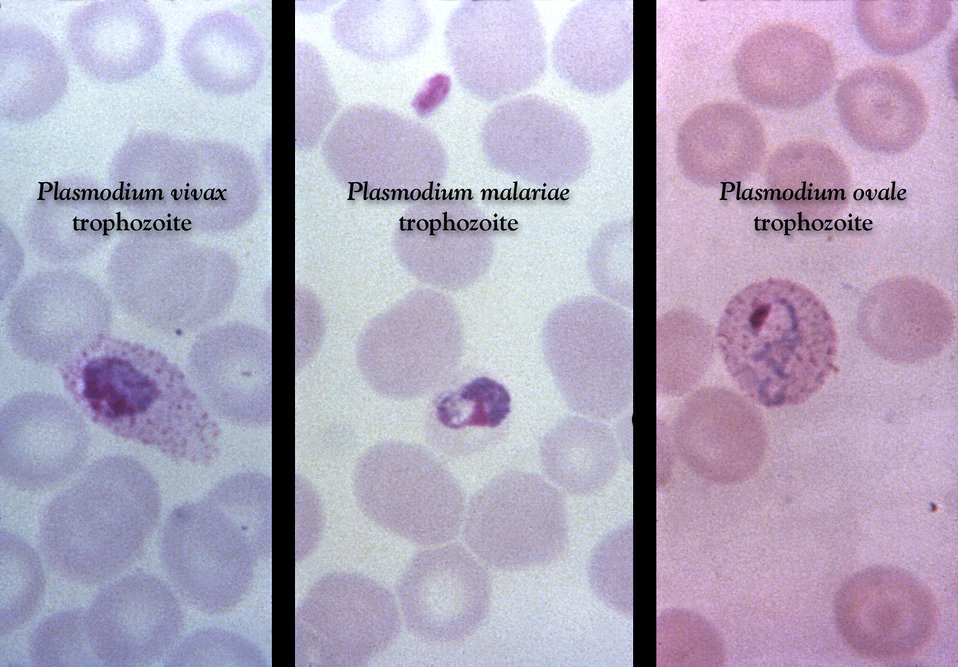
This thin film Giemsa stained micrograph reveals growing P. vivax, P. malariae, and P. ovale trophozoites.